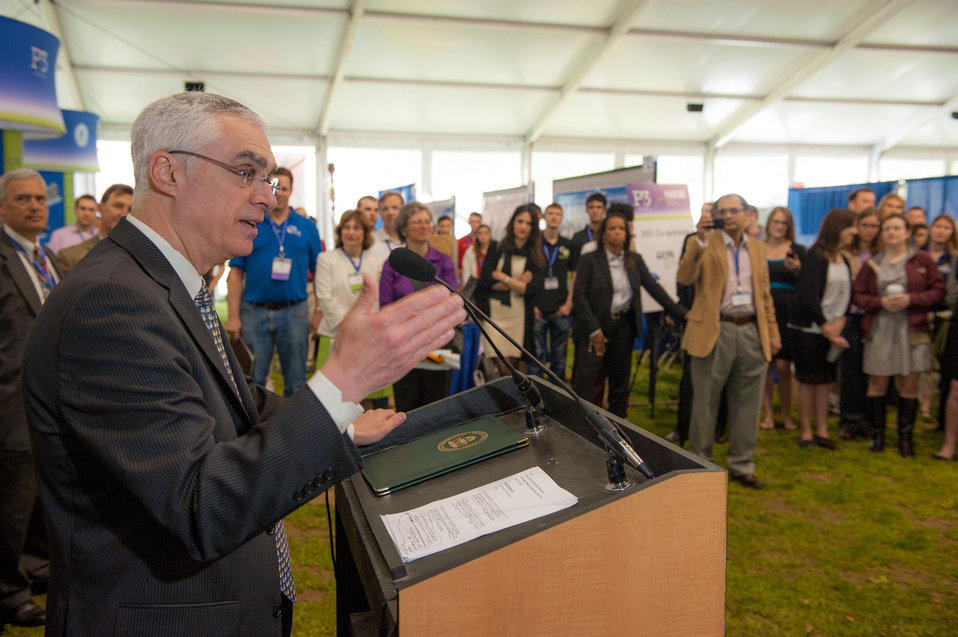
April 18, 2013 - EPA Acting Administrator, Bob Perciasepe, Praises Students at P3 Design Expo

People Prosperity and the Planet: National Sustainable Design Expo on the National Mall 18-19 April 2013